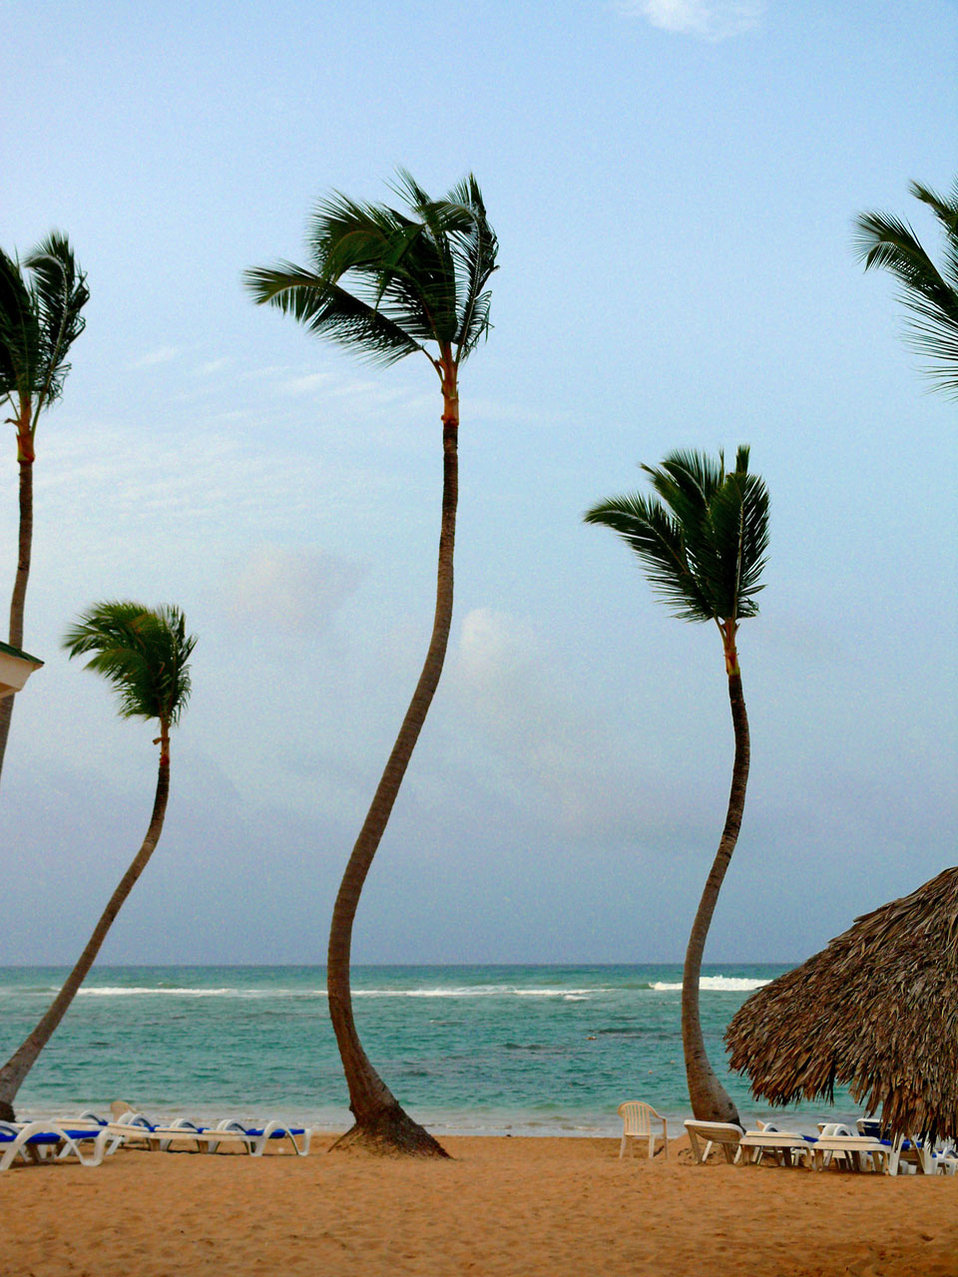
Palm tree on the beach.